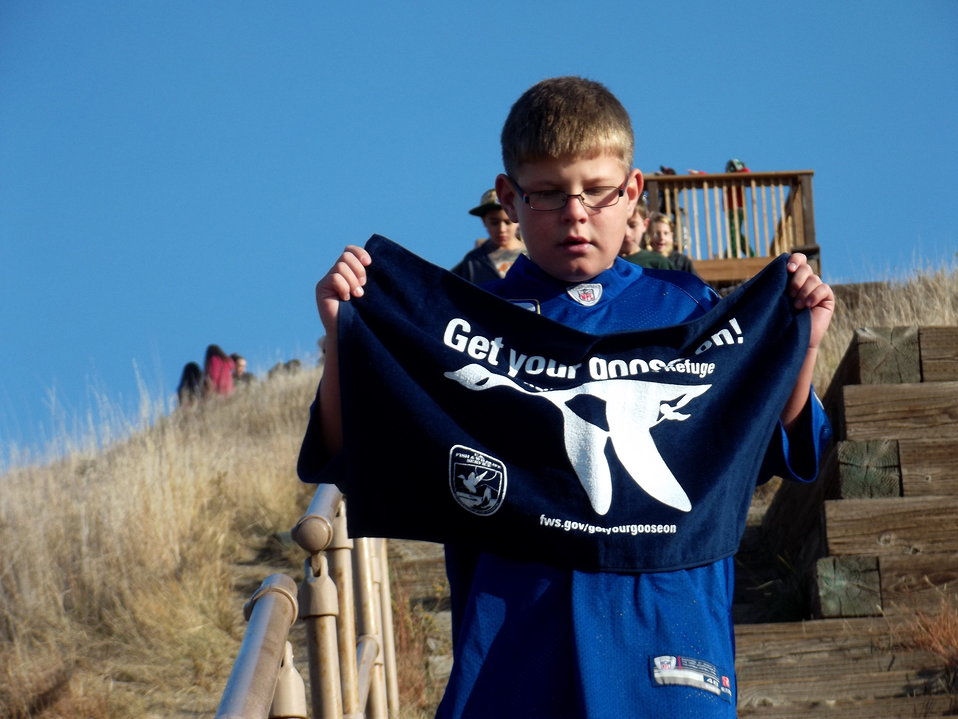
Get Your Goose On!

Photo taken at Sullys Hill National Game Preserve.